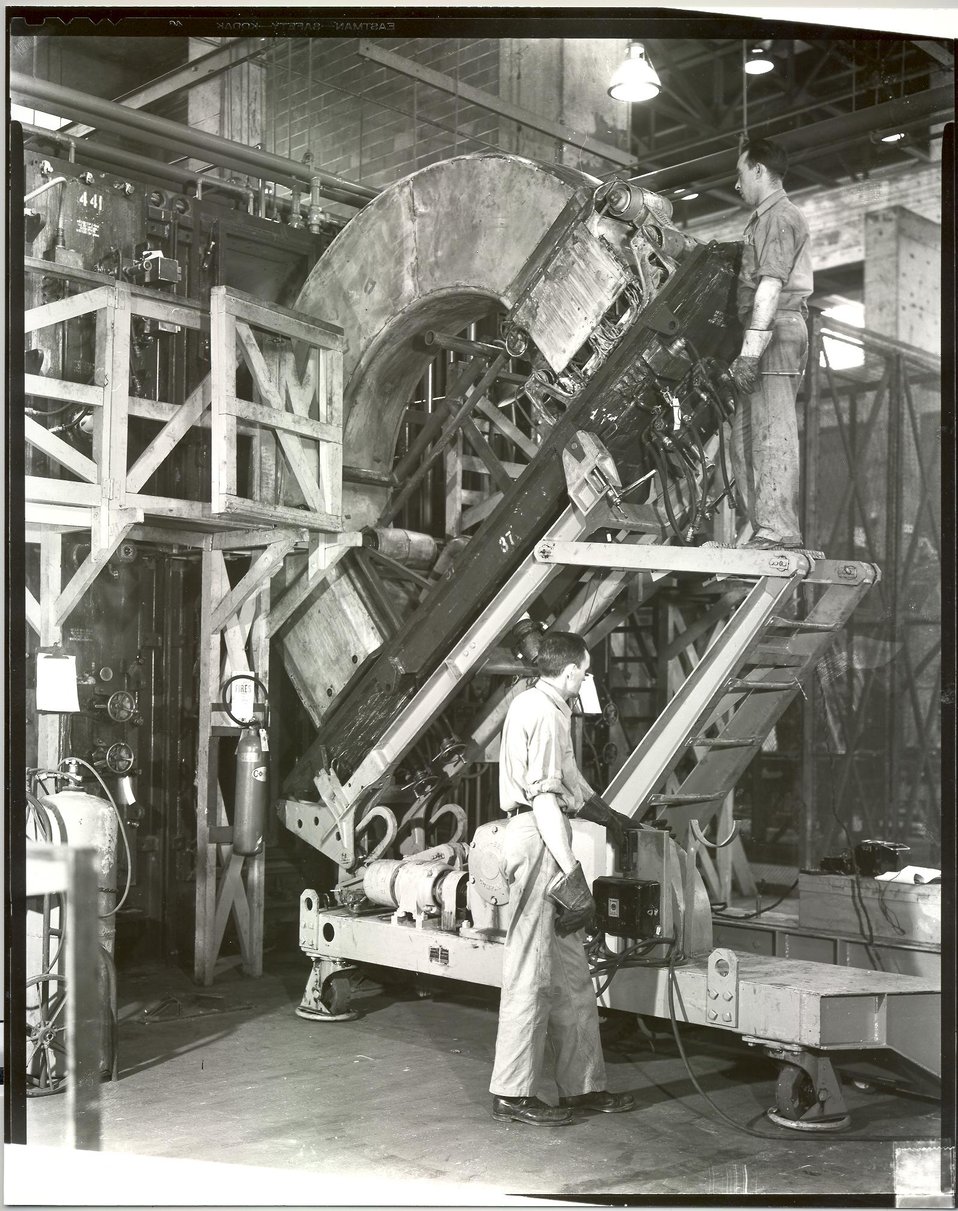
Alpha 1 D Drydocking